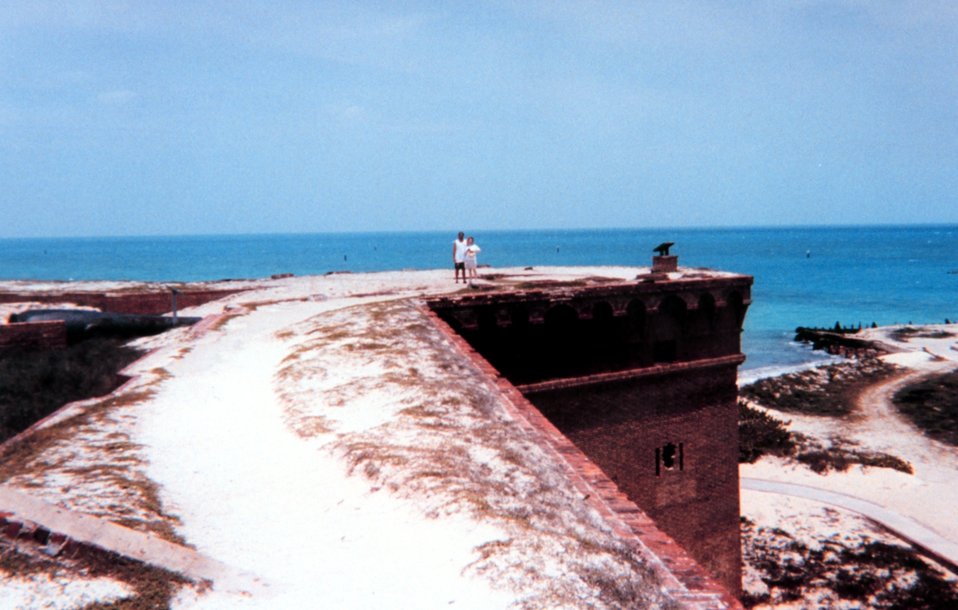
A view looking to the north along a section of the top of Fort Jefferson.